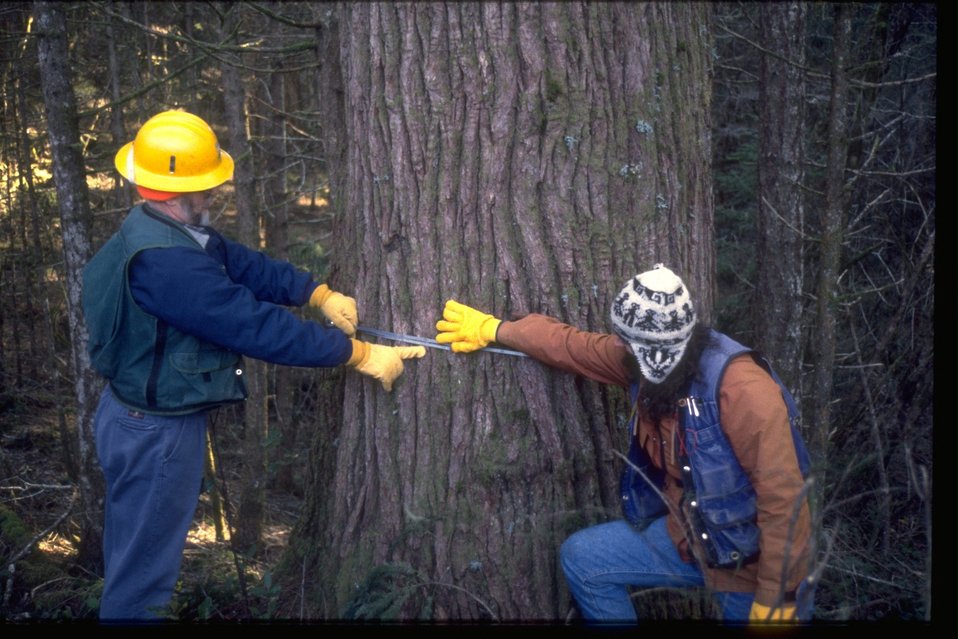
Forest workers measuring a Chinquapin Tree.